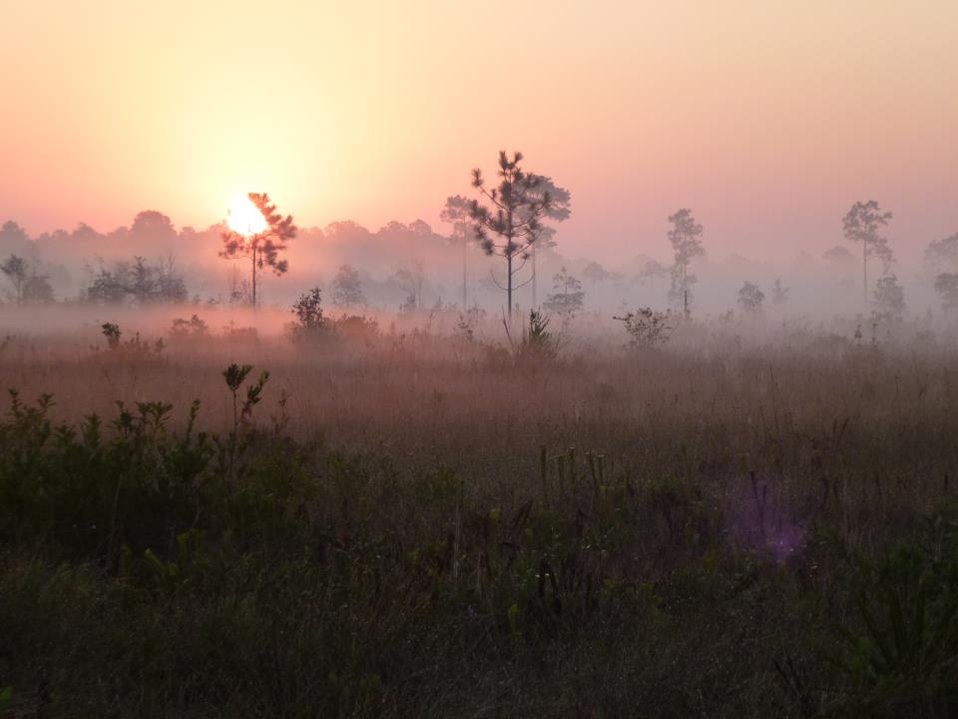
1st Mississippi sandhill crane nests found

...on March 2, 2012 at Mississippi Sandhill Crane National Wildlife Refuge in MS
We don't have a photo of endangered Mississippi sandhill cranes on the nest, so we're sharing this lovely photo of dawn at the refuge.